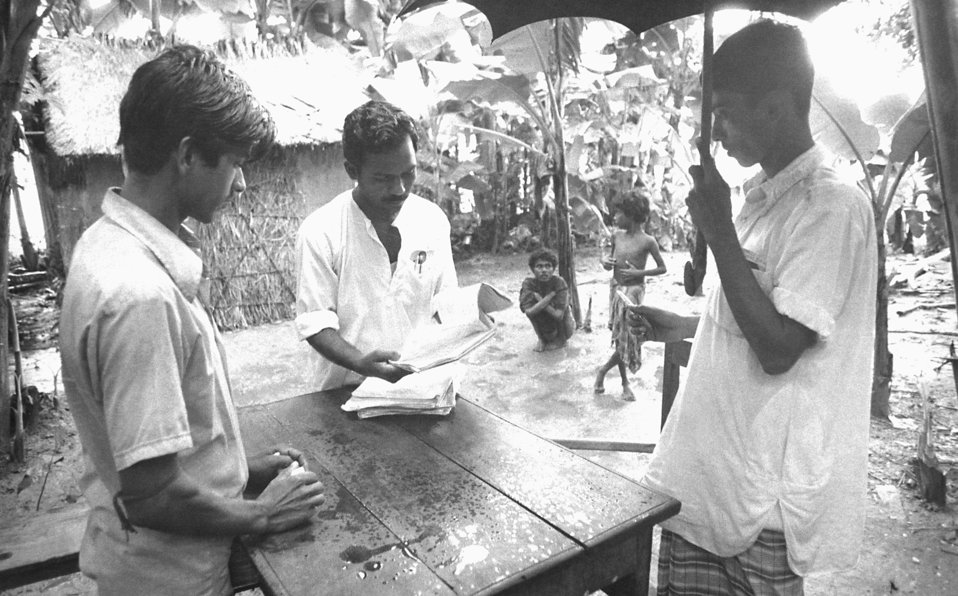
This 1975 image depicted a local smallpox eradication team field supervisor checking the smallpox Containment Book entries made by some of his team members during their house to house searches. The Containment Book was a ledger, which recorded all of the names of anyone living in, or within one half a mile from a smallpox case, and subsequently all those listed were vaccinated against smallpox. Those vaccinated were followed until a 'successful' vaccination was observed.